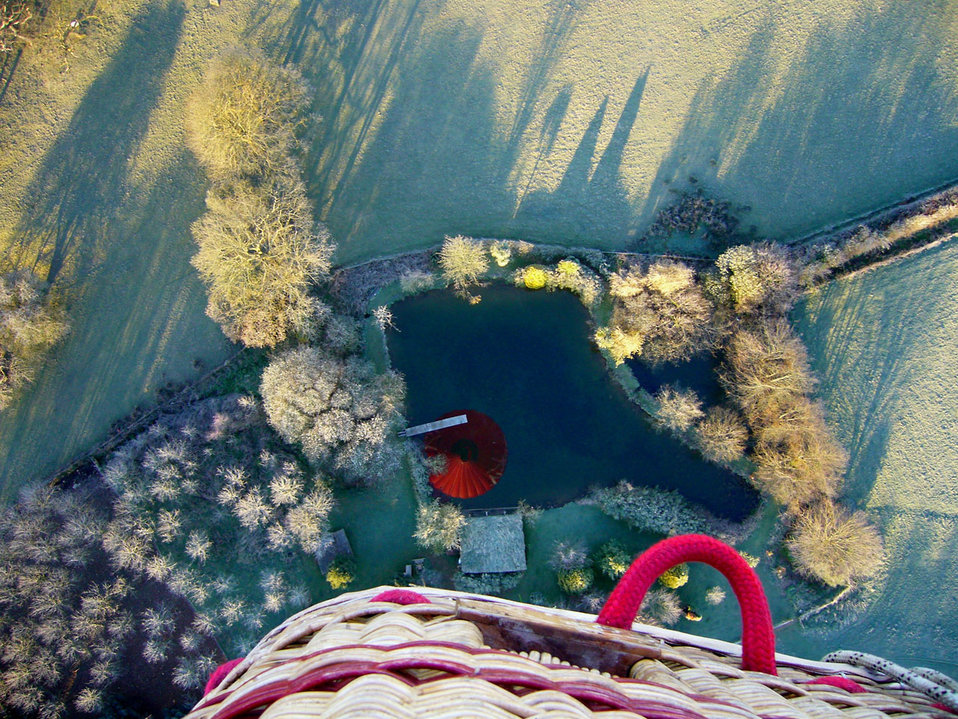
Hotair balloon in lake.